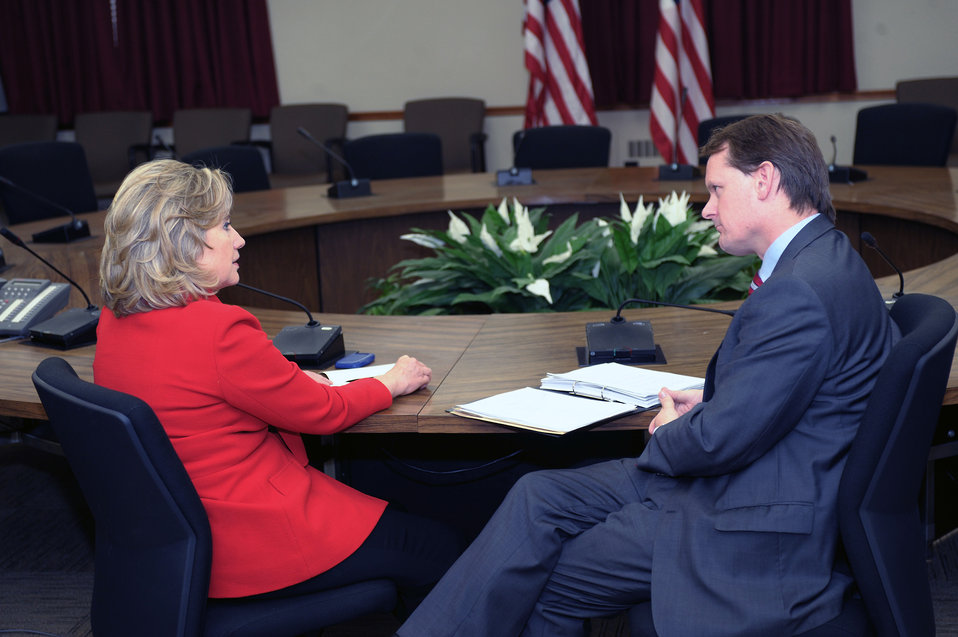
Secretary Clinton Meets With British Secretary of State for Northern Ireland Paterson

U.S. Secretary of State Hillary Rodham Clinton meets with British Secretary of State for Northern Ireland Owen Paterson at the U.S. Department of State in Washington, D.C., on October 19, 2010.